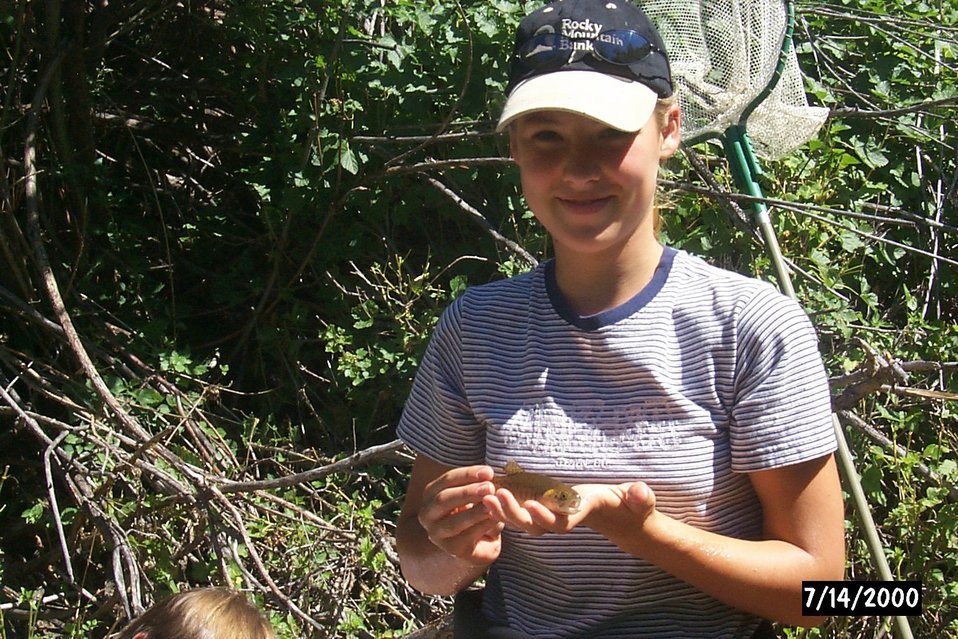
People Salmon Field Office UCSC Upper Columbia Salmon Clearwater District